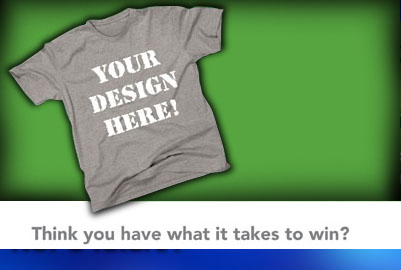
Year of the Air Force Family T-shirt design competition under way

Air Force Services Agency officials are promoting a T-shirt design competition now through Dec. 20, as part of the Year of the Air Force Family.